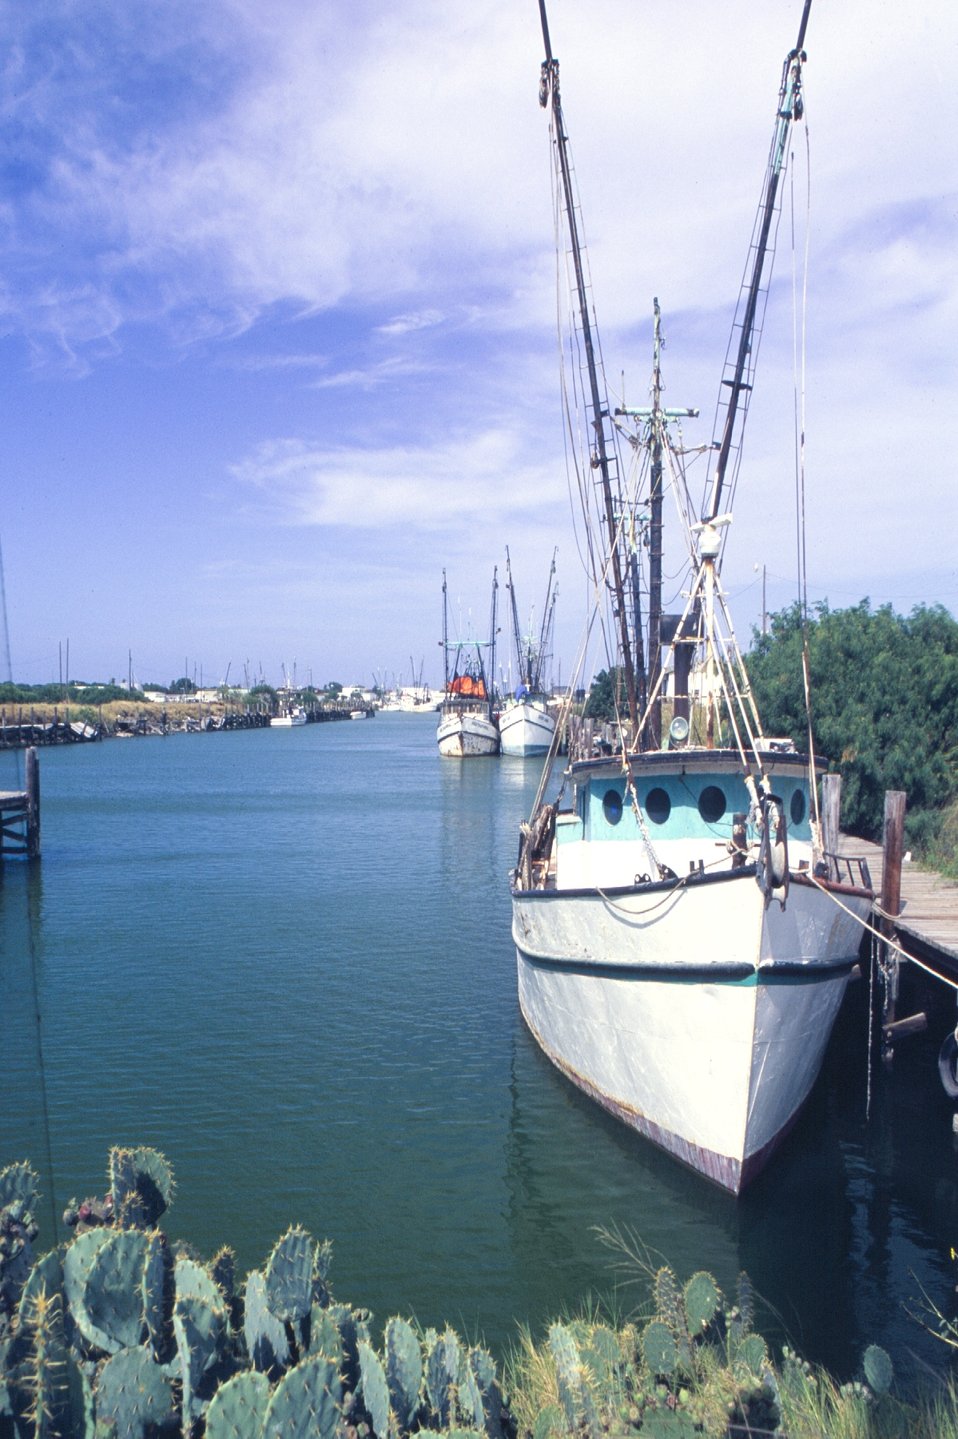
A view of the harbor at Port Isabel, Texas. Cactus and shrimp boats, an incongruous combination.